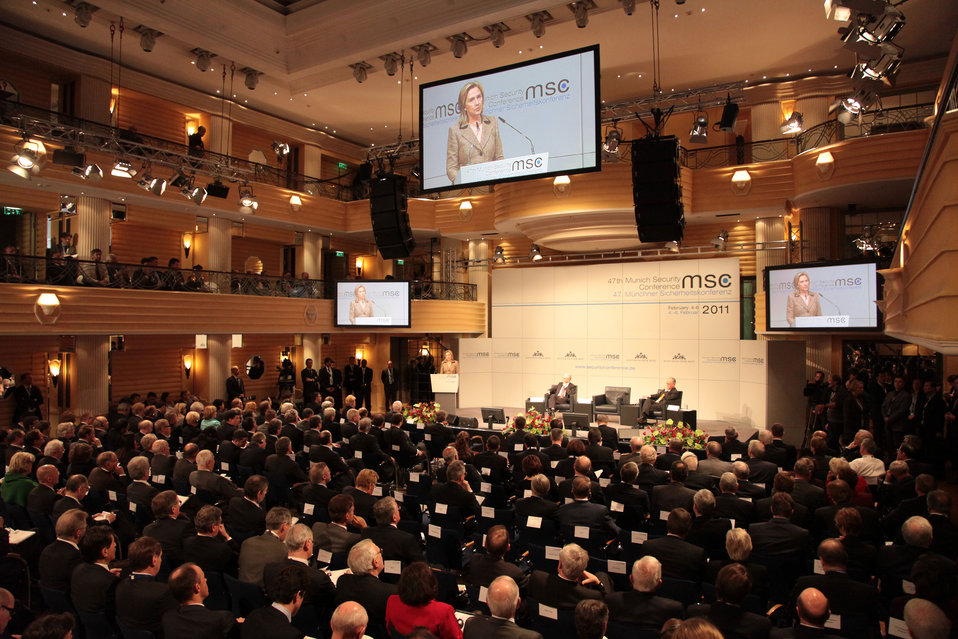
Secretary Clinton Delivers Remarks

U.S. Secretary of State Hillary Rodham Clinton deliver remarkss at the Munich Security Conference in Munich, Germany, on February 5, 2011.